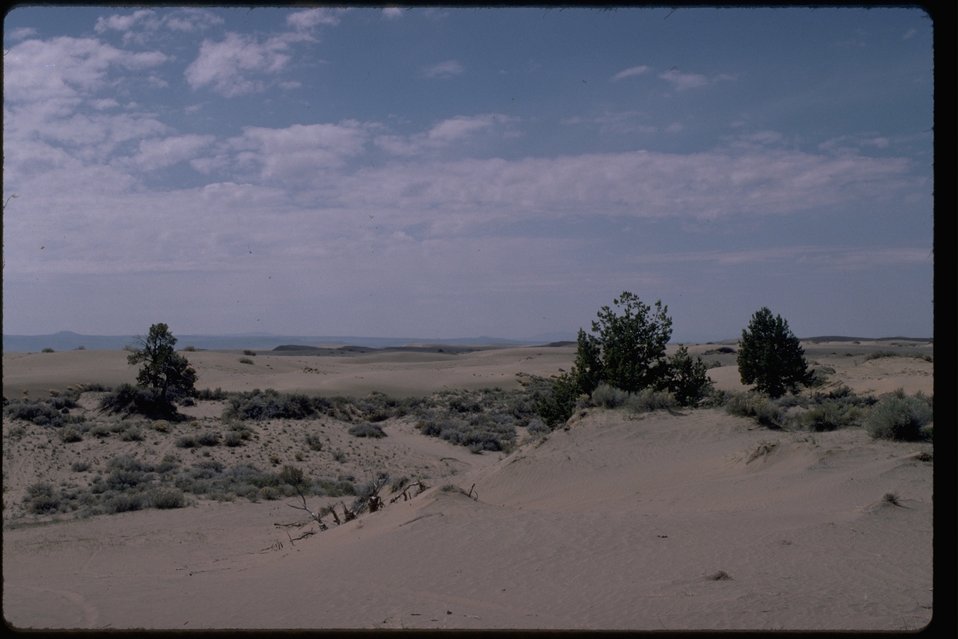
Sand Dunes Wilderness Study Area. OR 1-24